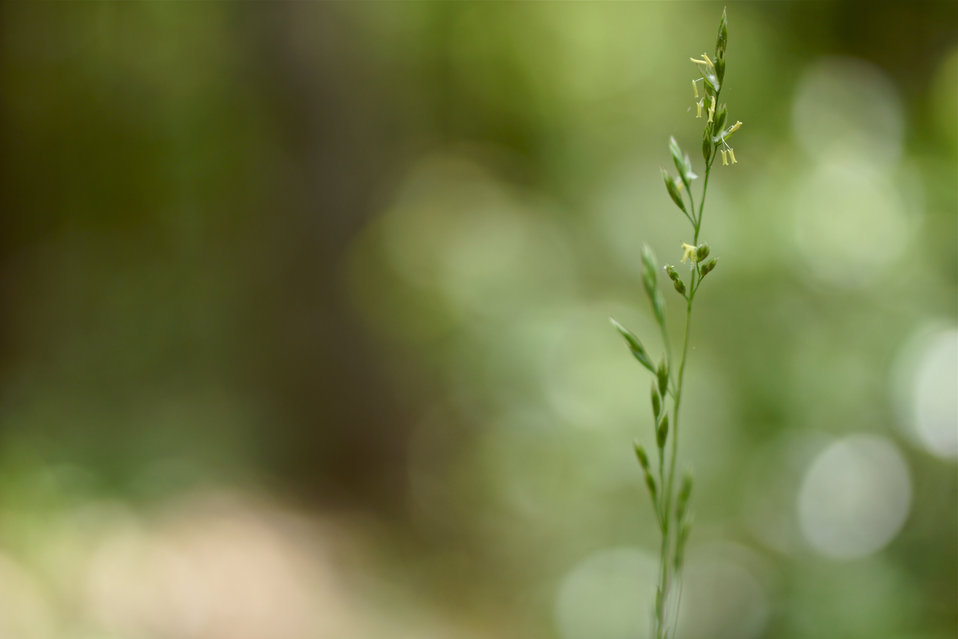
Grass flowers

In May, bog conservationists from Tennessee, North Carolina, and Georgia convened in the north Georgia mountains for the spring, 2014 meeting of the Bog Learning Network. The event provided an opportunity for biologists to see, first hand, the result of management efforts at two north Georgia bogs. More importantly, the outings provided an opportunity to share innovative approaches to bog management, such as the role of the Georgia Plant Conservation Alliance in conserving rare plants and coordinating a cadre of volunteers to work on bog management.

The Bog Learning Network was convened in the winter of 2013 as a way to bring together people working for bog conservation across the Southern Appalachians. Southern Appalachian bogs are one of North America’s rarest habitats and home to many rare plants and animals.